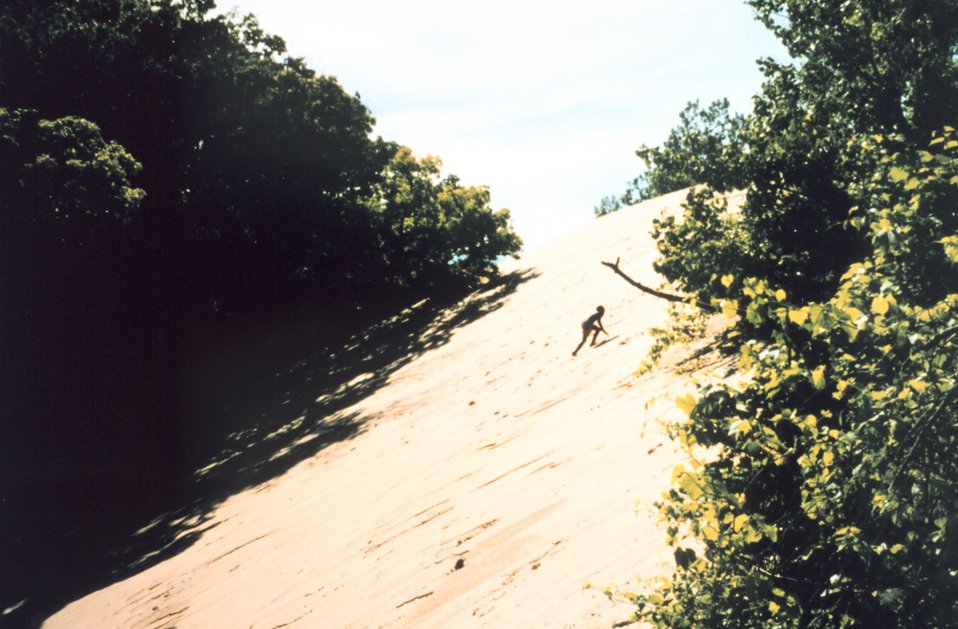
Boy climbing a large dune